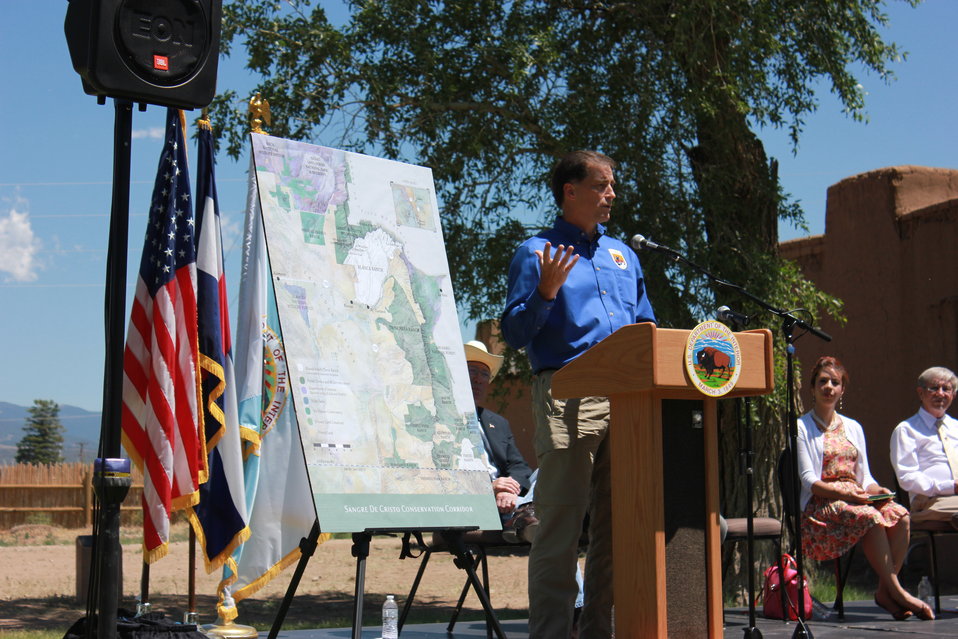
Historic Conservation Easement in Sangre de Cristo Mountains